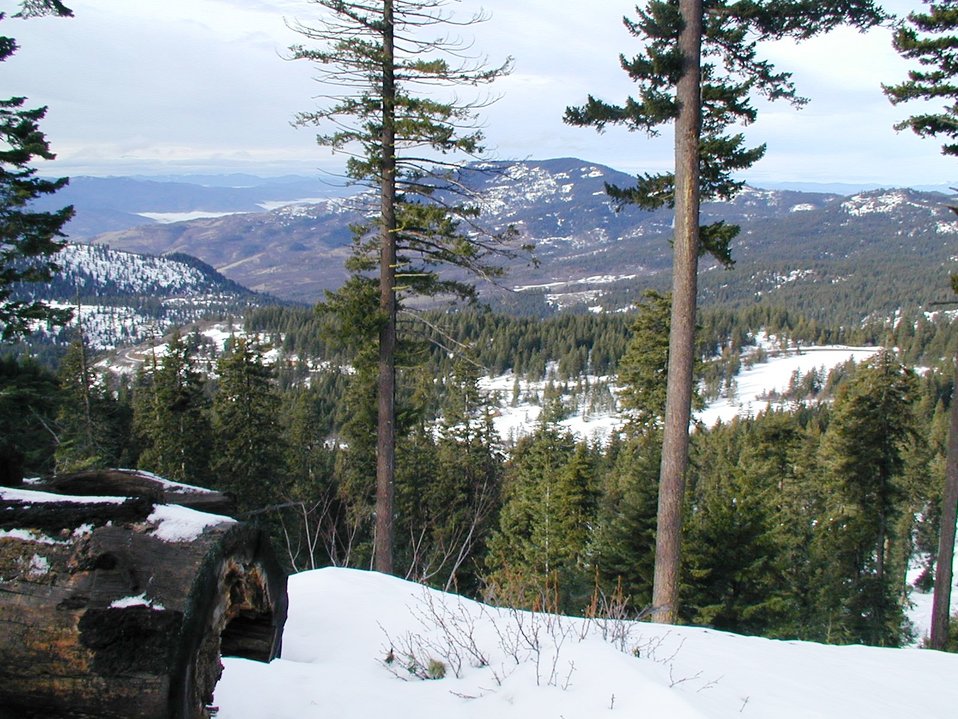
A view from Bullwinke Look Out in the Buck Prairie Winter Recreation Area located on the Medford District.